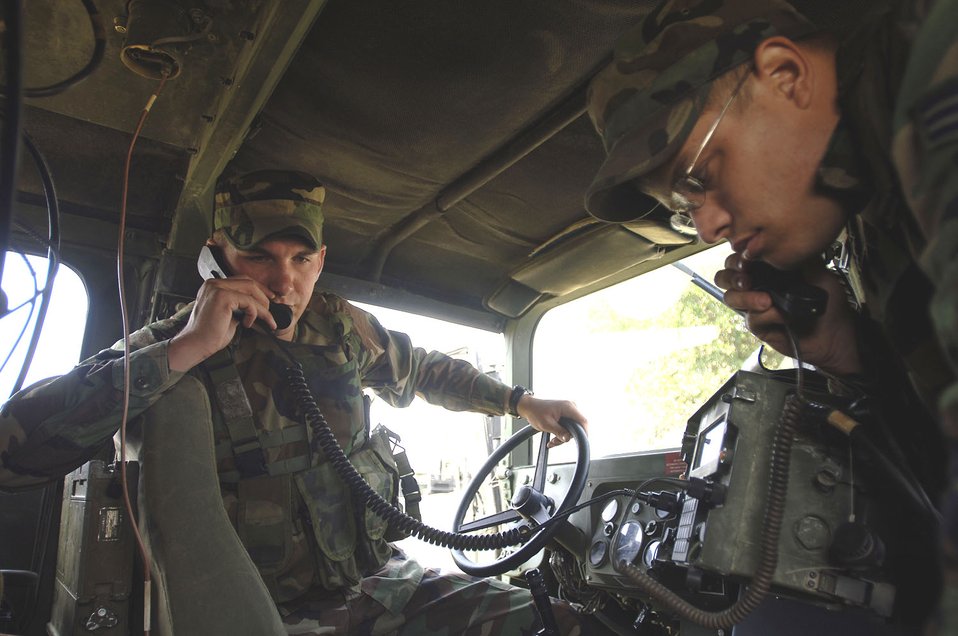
Atlantic Strike provides joint training for interdependent warfighters

Airman 1st Class Justin Fuchs and Senior Airman Matthew Madsen conduct a radio check to communicate with aircraft during Atlantic Strike IV at Avon Park, Fla., Oct. 23. Atlantic Strike includes more than 700 joint participants in seven days of training operations.